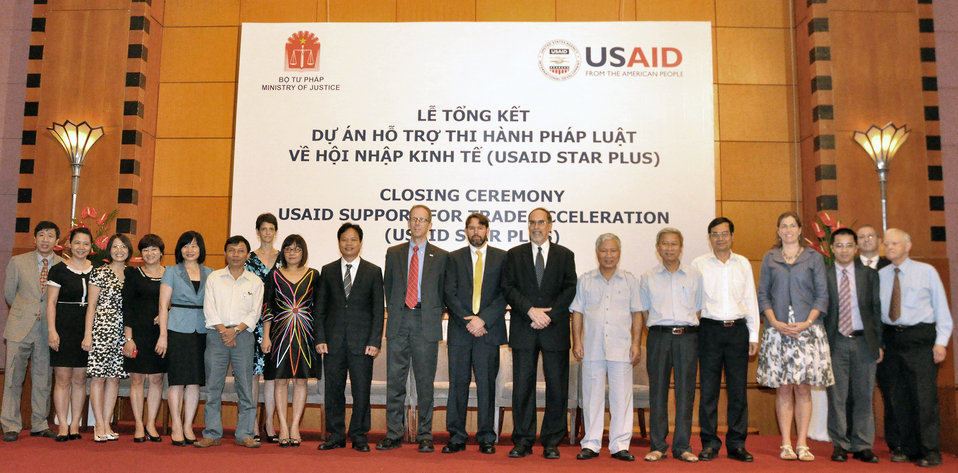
USAID's Support for Trade Acceleration Project (USAID STAR Plus) Closing Ceremony

Hanoi, August 26, 2013.